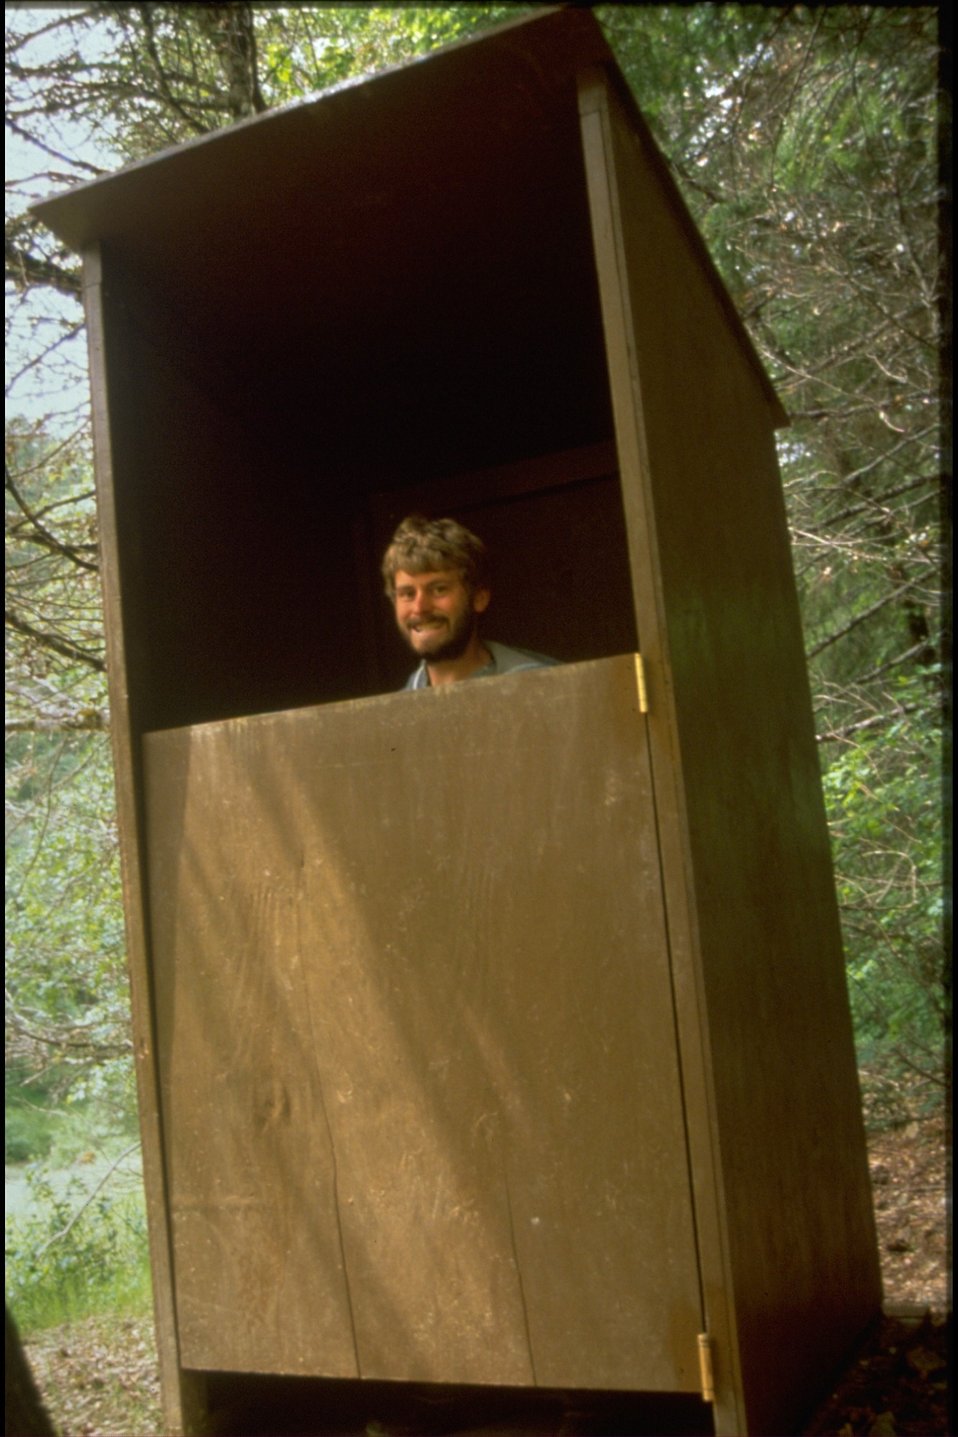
Outhouse at Meado Creek.